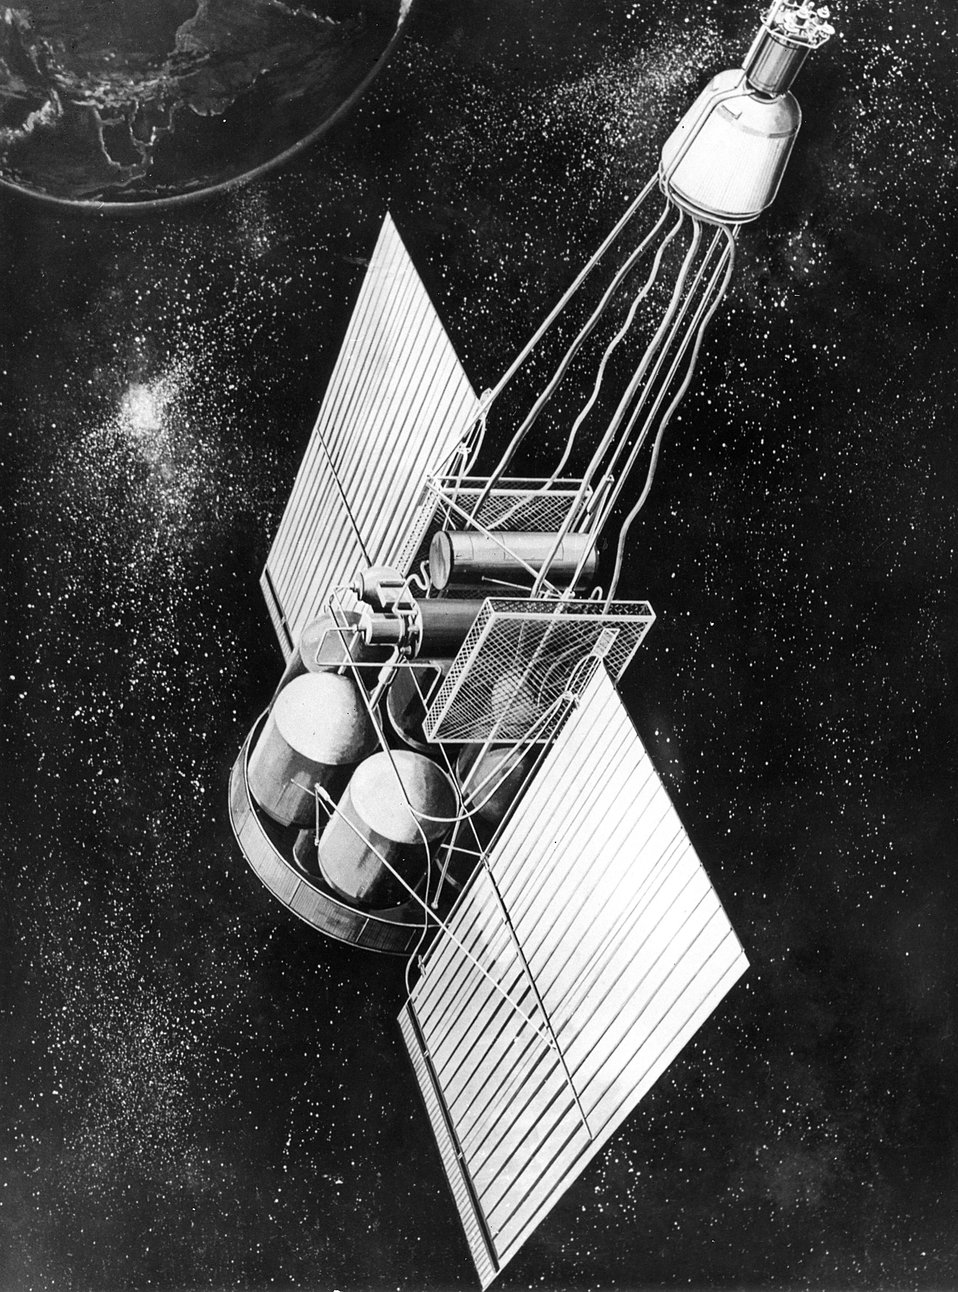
Artist's concept of SNAP-8 flight model.